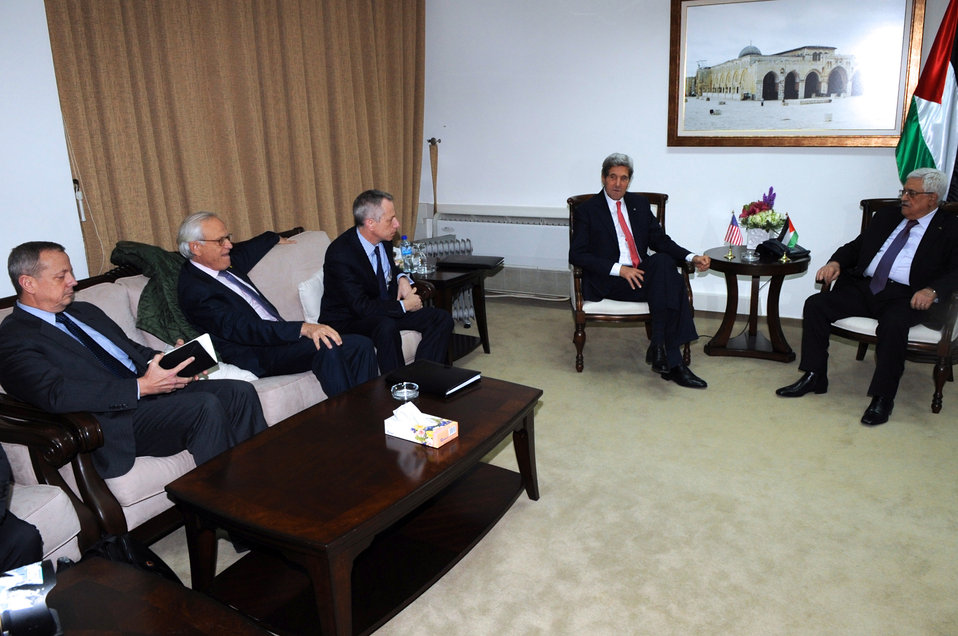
General Allen Joins the Group Briefing With Palestinian Authority President Abbas

Far left, Retired Marine Corps General John Allen, a special adviser on Middle East security issues, joins U.S. Secretary of State John Kerry and other advisers before a meeting with Palestinian Authority President Mahmoud Abbas in Ramallah, West Bank, on December 12, 2013.